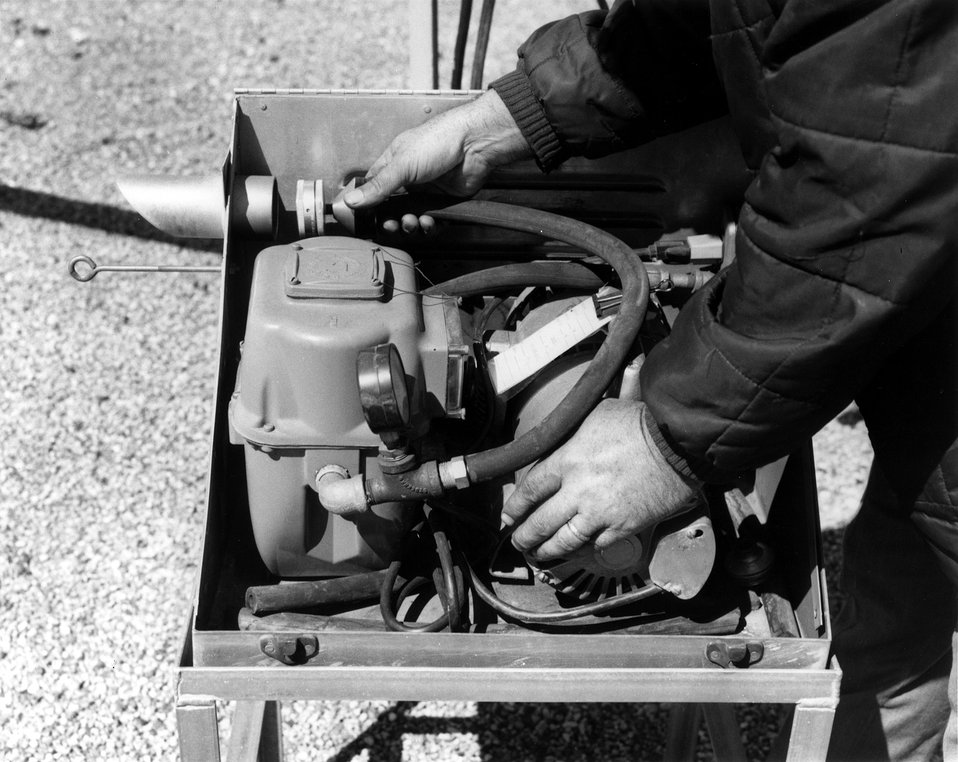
A remotely located low air volume sampler at the Atomic Energy Commission's National Reactor Testing Station in Idaho. Circa 1974.